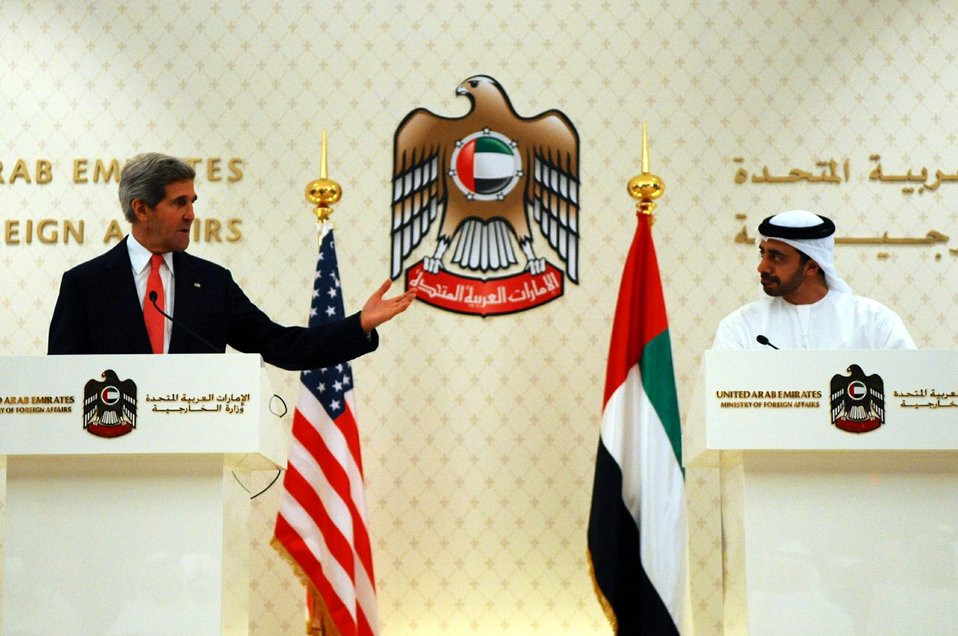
Secretary Kerry Speaks During a Joint News Conference in the UAE

U.S. Secretary of State John Kerry gestures to United Arab Emirates Minister of Foreign Affairs Abdullah bin Zayed Al Nayhan during a joint news conference at the Ministry of Foreign Affairs in Abu Dhabi, United Arab Emirates, on November 11, 2013.